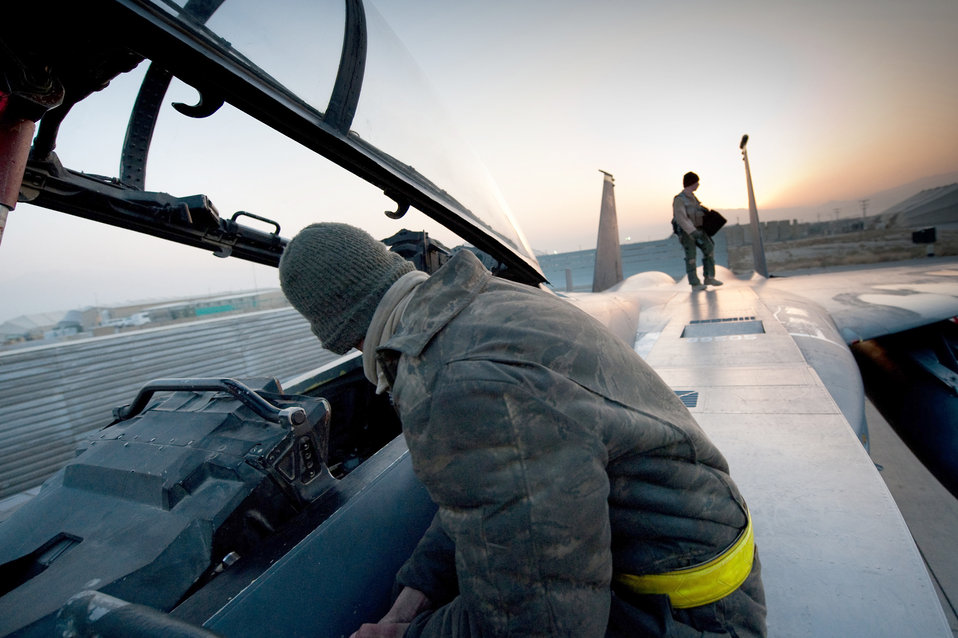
Checking it twice

Airmen prepare an F-15E Strike Eagle for flight Jan. 4, 2011, at Bagram Airfield, Afghanistan. They are deployed from Seymour Johnson Air Force Base, N.C.